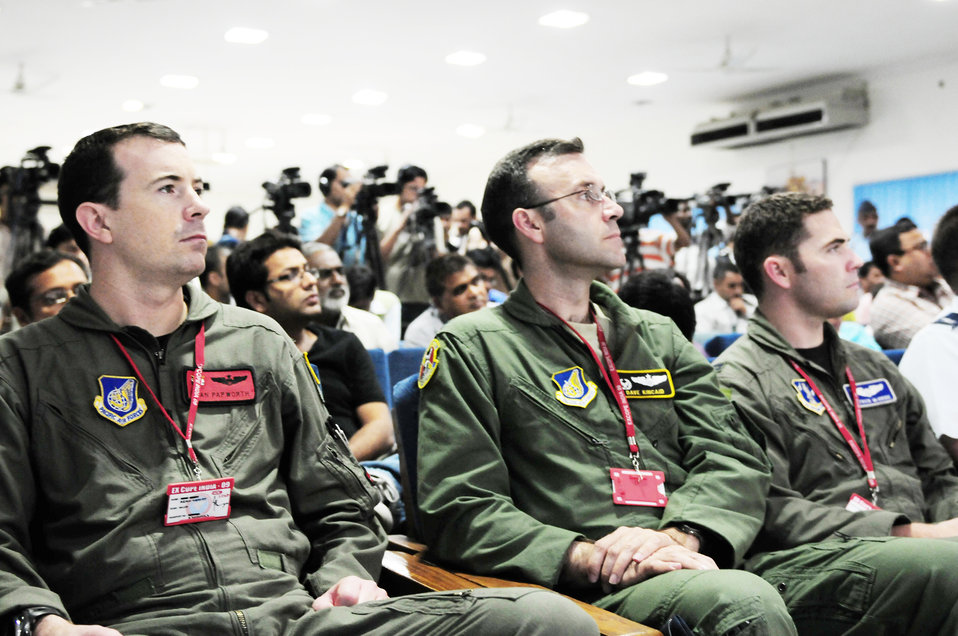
Exercise Cope India begins

Maj. Sean Papworth (L), Lt. Col. Dave Kincaid and Capt. Patrick McBride standby to give aircraft related expertise during a Cope India press conference Oct. 19, 2009, at Air Force Station Agra, India. More than 150 U.S. Air Force and Army personnel are participating in Cope India, a United States and India airlift exercise that provides training for humanitarian assistance and disaster relief operations. Major Papworth is from the 535th Airlift Squadron at Hickam Air Force Base, Hawaii; Colonel Kincaid is from the 36th AS at Yokota Air Base, Japan; Captain McBride is from the 115th AS at Channel Islands Air National Guard Station, Port Hueneme, Calif.